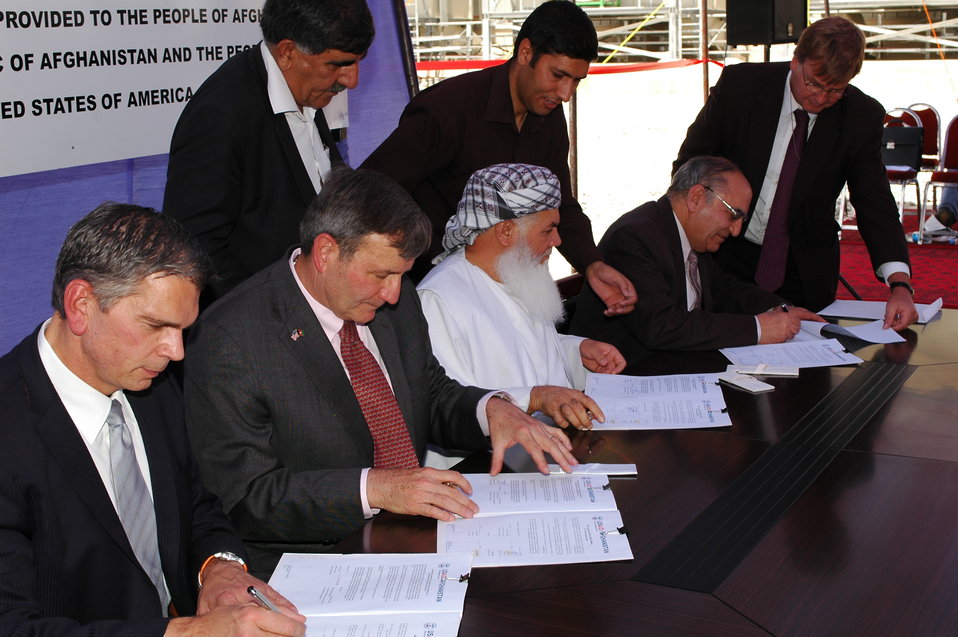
105 MW Tarakhil Power Plant Handover